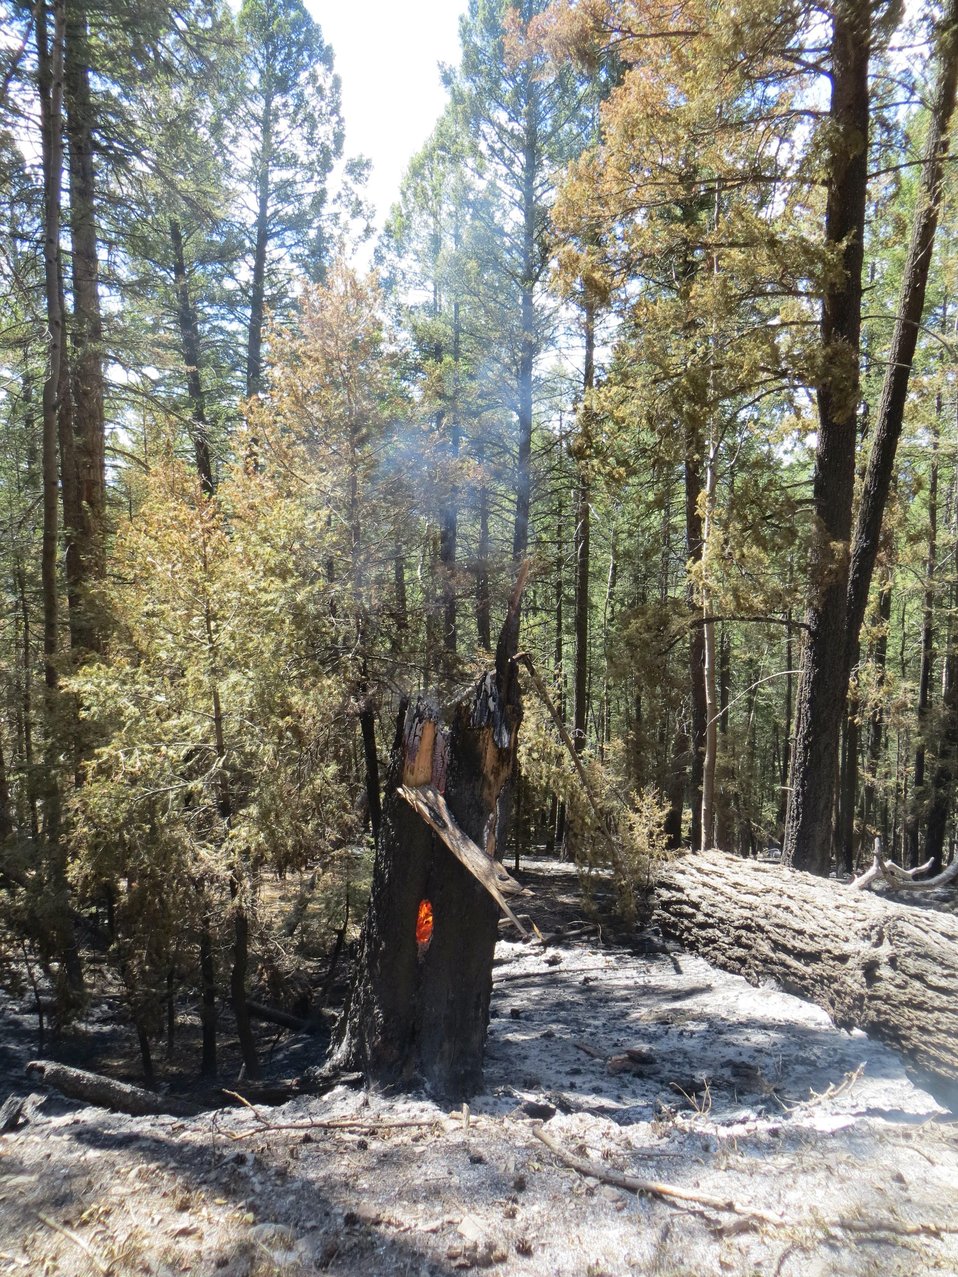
A tree stump smolders in the aftermath of the Thompson Ridge Fire in the Sante Fe National Forest approximately 10 miles north of Jemez, NM began on May 31, 2013 by human ignition has consumed over 29, 903 acres.